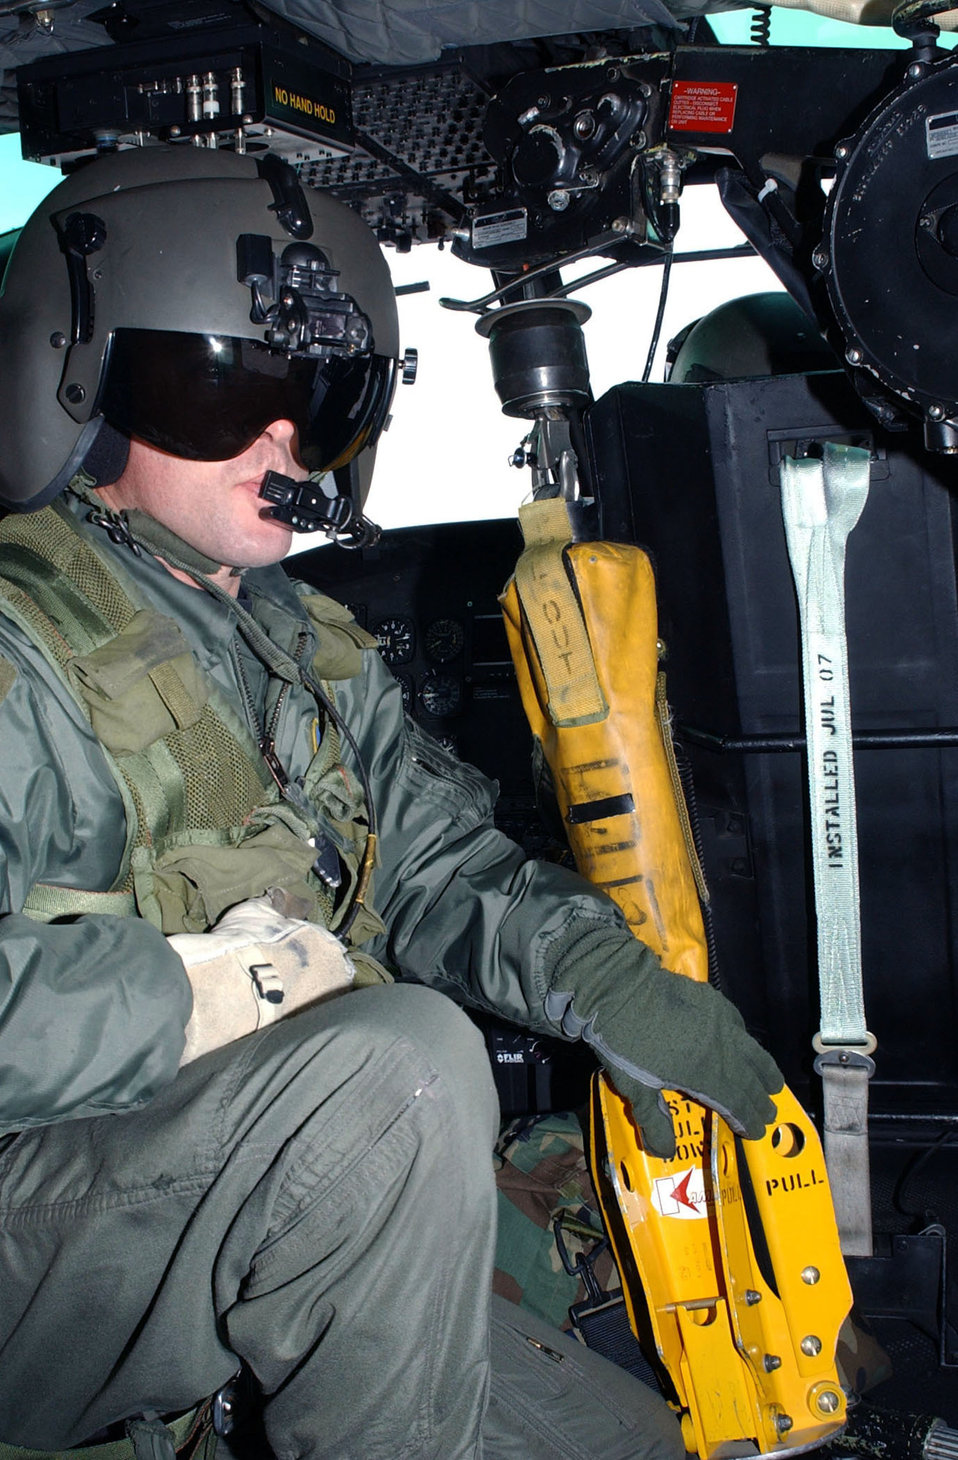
Malmstrom hiker rescue

Staff Sgt. Michael Frances prepares to lower a yellow forest penetrator like the one used to rescue an injured hiker Juy 2, 2010, near Missoula, Mont. Sergeant Frances is a flight engineer from the 40th Helicopter Squadron.